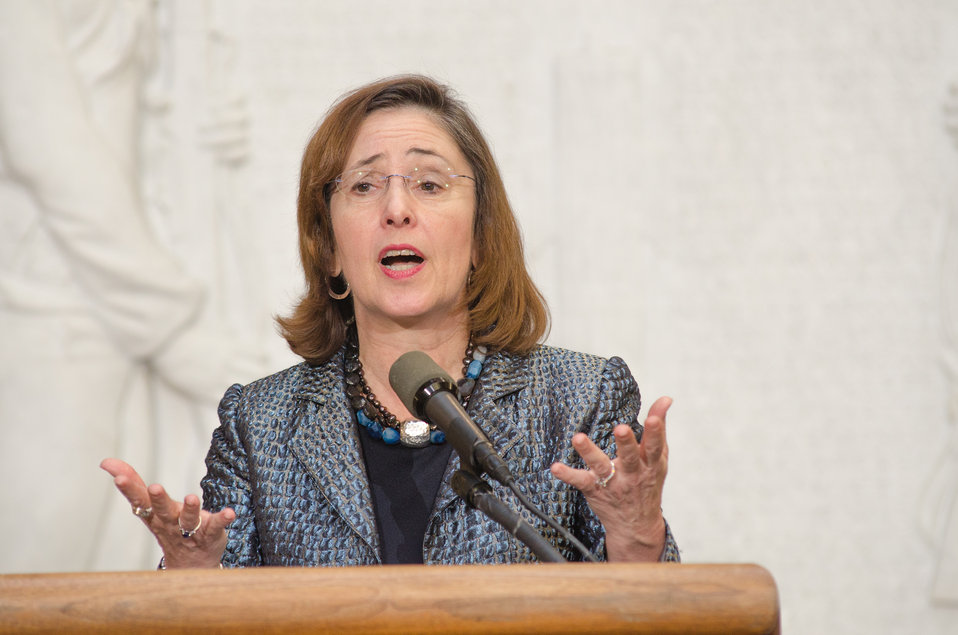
U.S. Department of Agriculture (USDA) Natural Resources Conservation Service (NRCS) Regional Conservationist for the West Diane Gelburd provides remarks during the 2012 Combined Federal Campaign Awards Ceremony, Thursday, Mar. 21, 2013, at the USDA Whitten Building Patio, in Washington D.C.